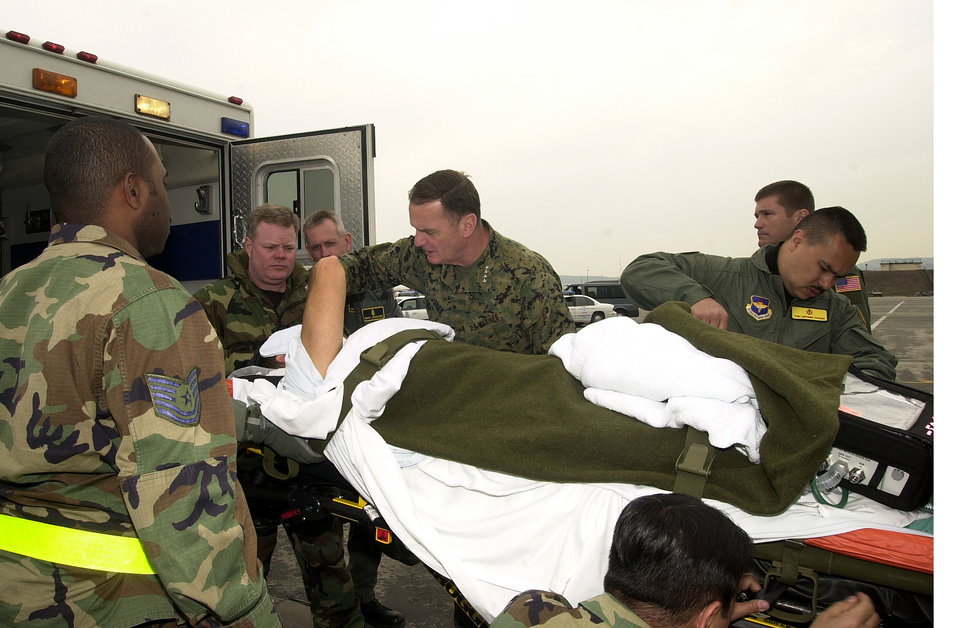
Visiting the wounded

OPERATION IRAQI FREEDOM -- Gen. James Jones, Commander, U.S. European Command, visits with a Marine Corps service member wounded during Operation Iraqi Freedom before he is carried aboard a C-17 Globemaster aircraft at Ramstein Air Base Germany.